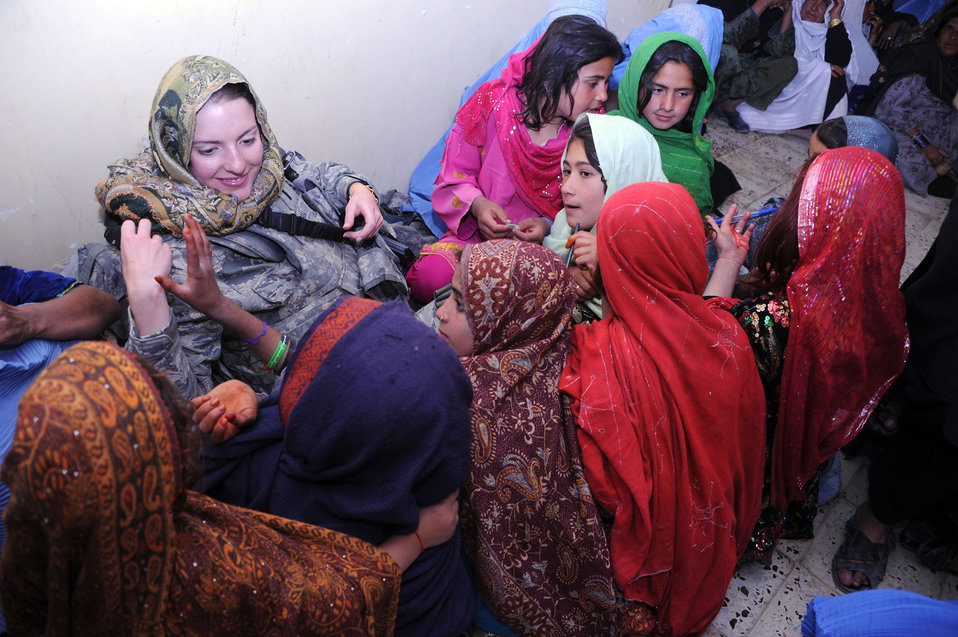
Shura gives voice to women's role in Paktika

First Lt. Emily Chilson interacts with the girls April 25, 2011, in Urgun, Afghanistan, during the first women's shura. Lieutenant Chilson is the Paktika Provincial Reconstruction Team public affairs officer and female engagement team member.